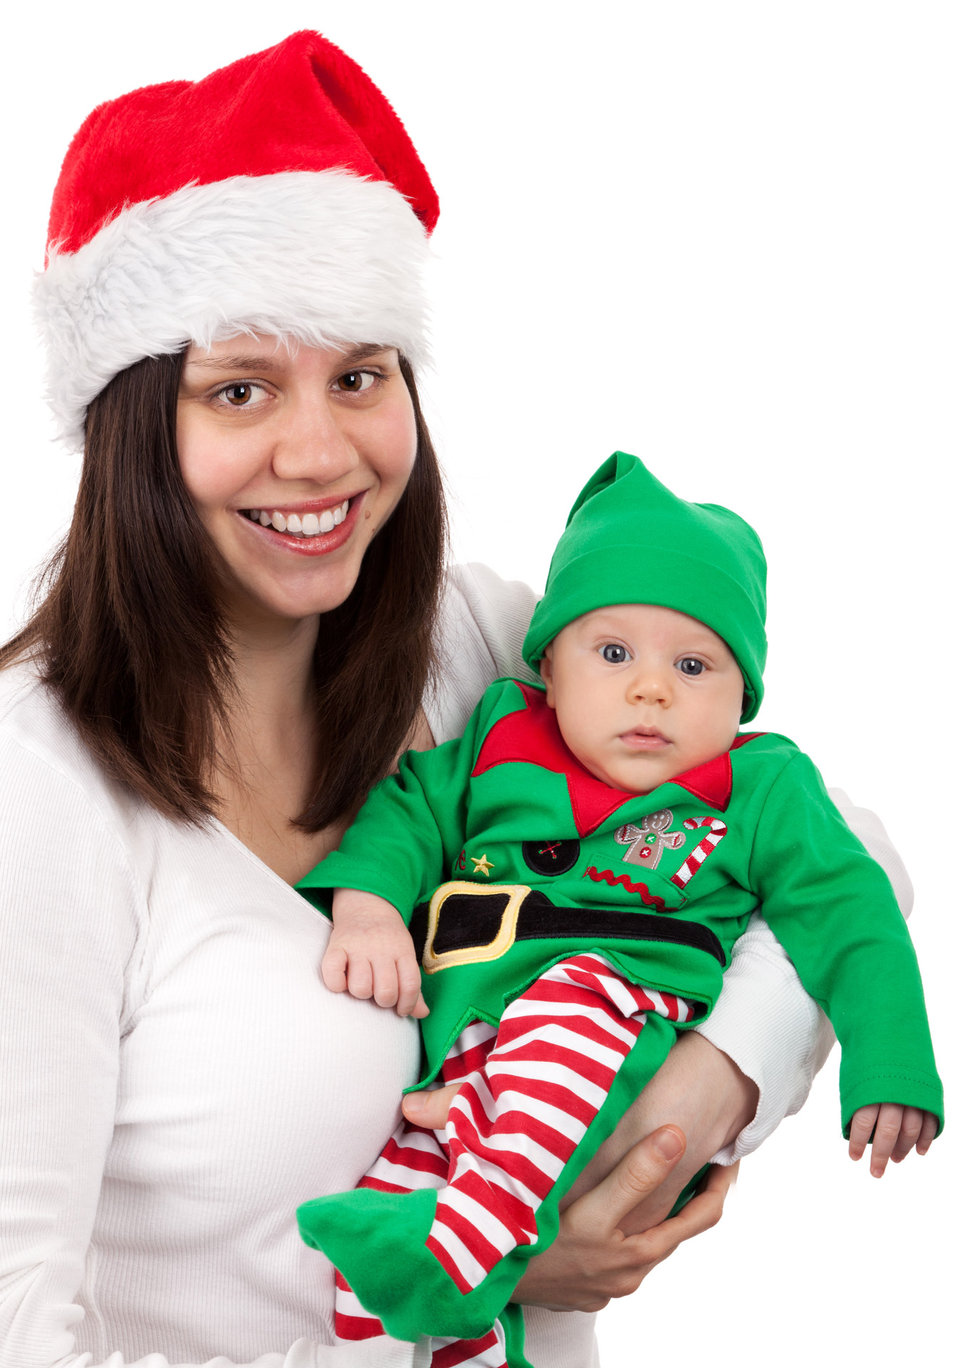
Santa and elf

Santa mom and her little elf isolated on white background.